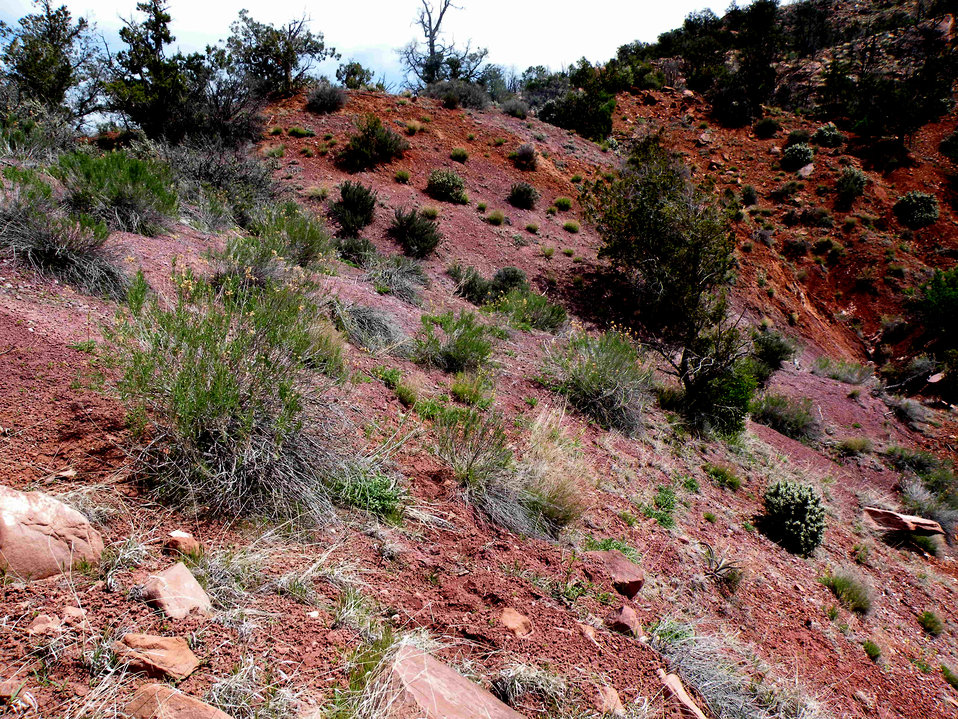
Shivwits milkvetch - habitat (Astragalus ampullarioides)

Shivwits milkvetch is a highly endemic perennial herb only known from a few populations in Washington County in southwestern Utah. It is restricted to soils derived from the Chinle Formation. It was listed endangered in 2001.